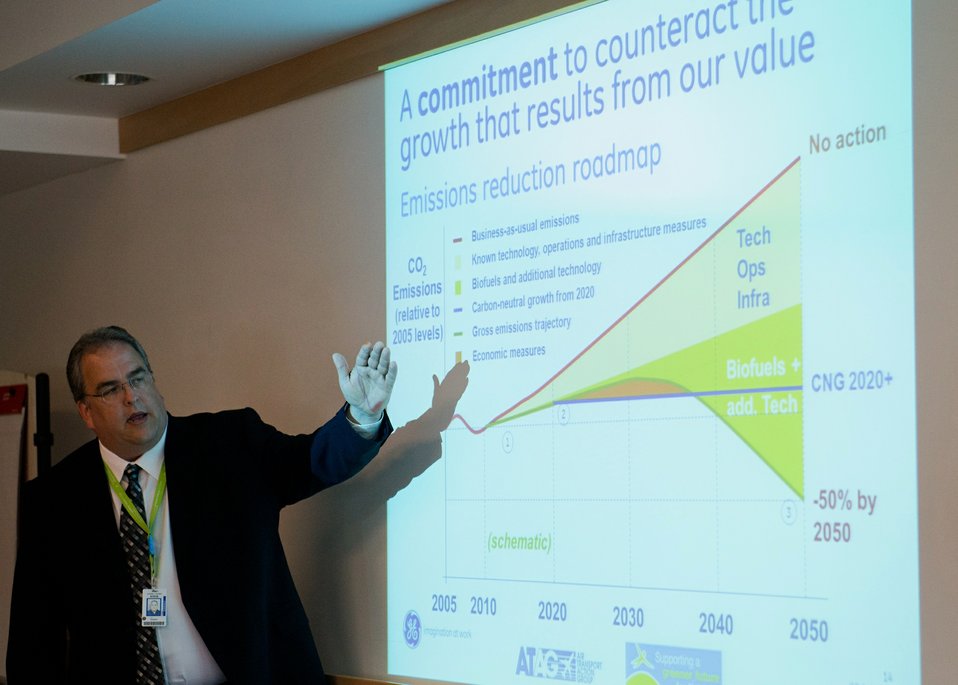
G.E. Aviation Senior Marketing Manager Steve Csonka briefs Agriculture Secretary Tom Vilsack (not shown) on the company’s vision and efforts to increase sustainability across its portfolio of products and services at the company’s Learning Centre in suburban Cincinnati, OH on Wednesday, June 27, 2012. Secretary Vilsack was in Ohio to highlight the U.S. Department of Agriculture’s (USDA) collaboration with the Ohio Aerospace Institute, air carriers and producer groups to develop a Midwest-regional approach to providing renewable jet fuel at GE Aviation’s Cincinnati-area facilities.